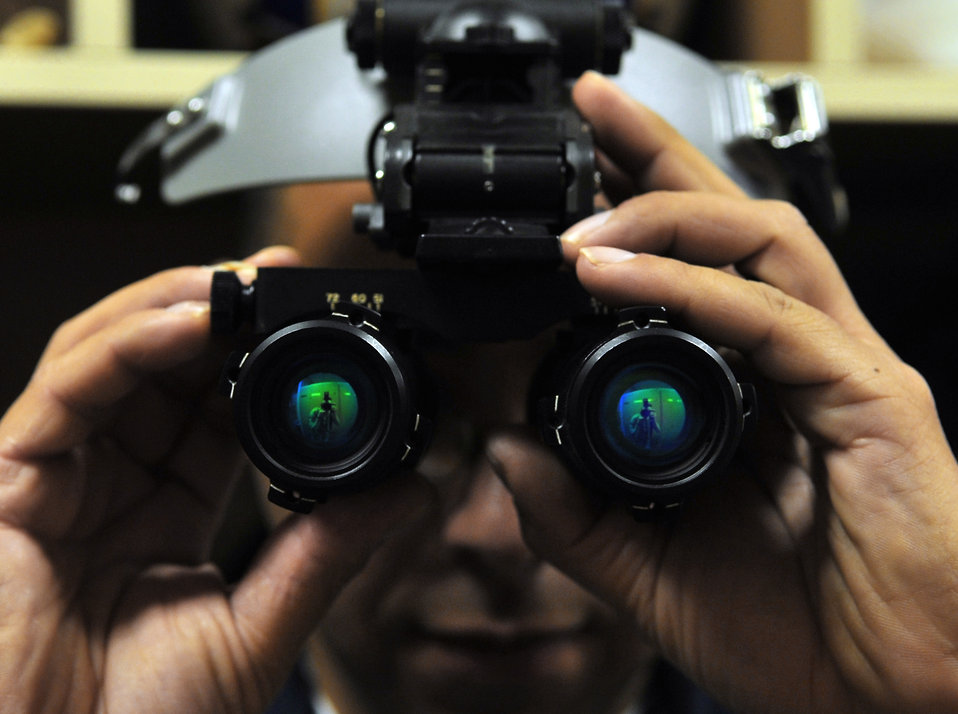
Team effort impacts Red Flag-Alaska

Navy Petty Officer 2nd Class Joseph Villarreal inspects a pair of night vision goggles for scratches on the lenses and to ensure it has free movements during Red Flag-Alaska April 23 at Eielson Air Force Base, Alaska. Red Flag-Alaska is a Pacific Air Forces-directed field training exercise for U.S. and coalition forces flown under simulated air-combat conditions. Petty Officer Villarreal is an aviation life support equipment technician assigned to Naval Air Station Whidbey Island, Wash.